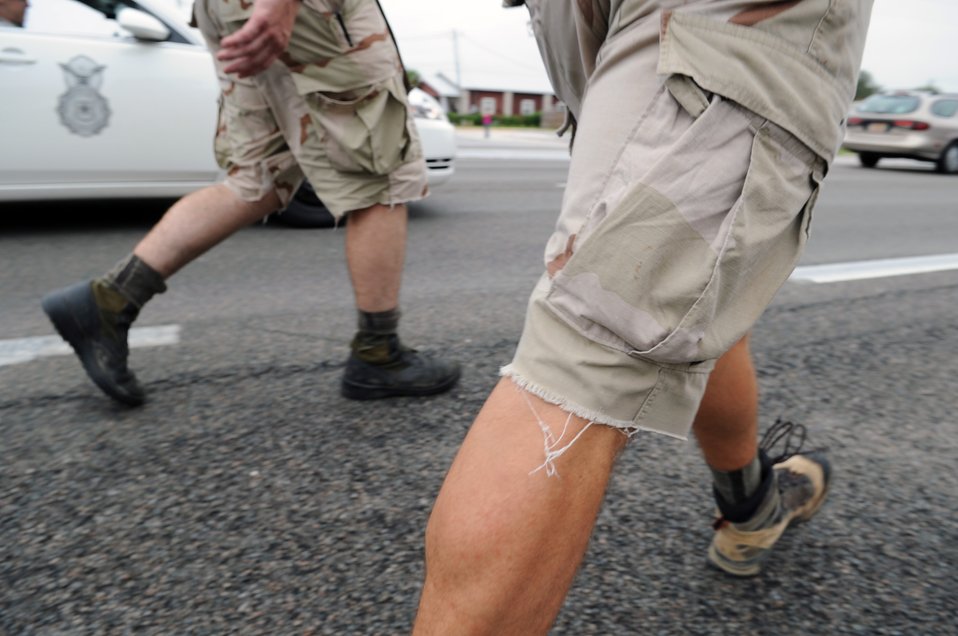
Warrior walk

Staff Sgts. Jesse Schrader and David White, both from the 23rd Special Tactics Squadron at Hurlburt Field, Fla., walk a stretch of road in Navarre, Fla. The Airmen were part of a 12-man team that marched from Lackland Air Force Base, Texas, to Hurlburt Field to honor fallen special tactics Airmen. The journey covered more than 800 miles and five states.